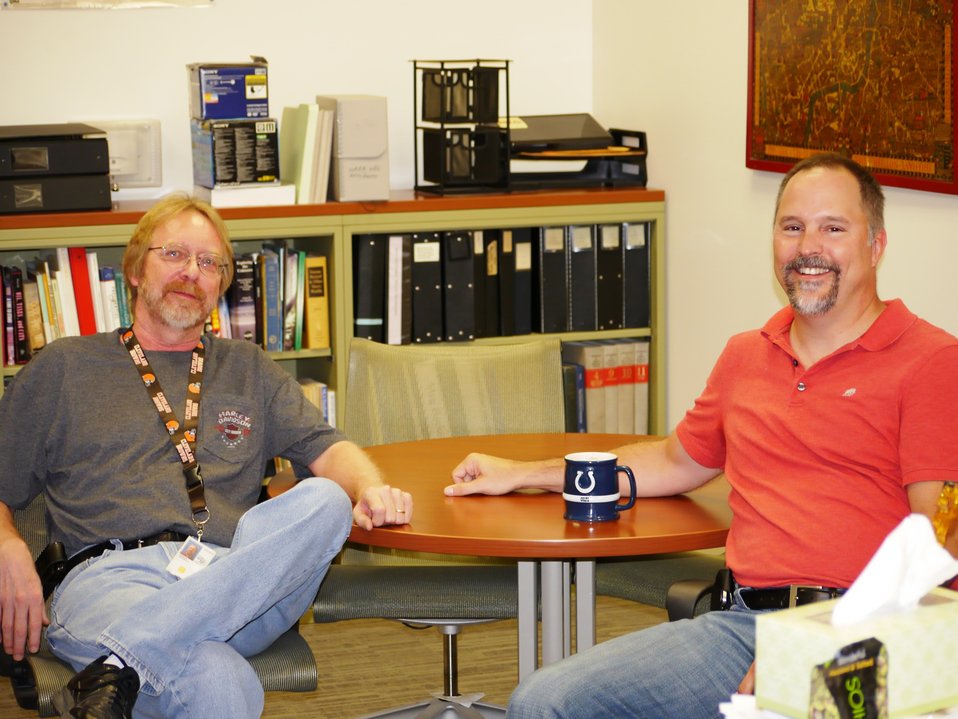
Leonard Harmon, Jr. and Darin Cote in a morning meeting between Archives, Business Support and Agency Services; Location: John Burgess Facility, National Archives at Fort Worth, Fort Worth, TX